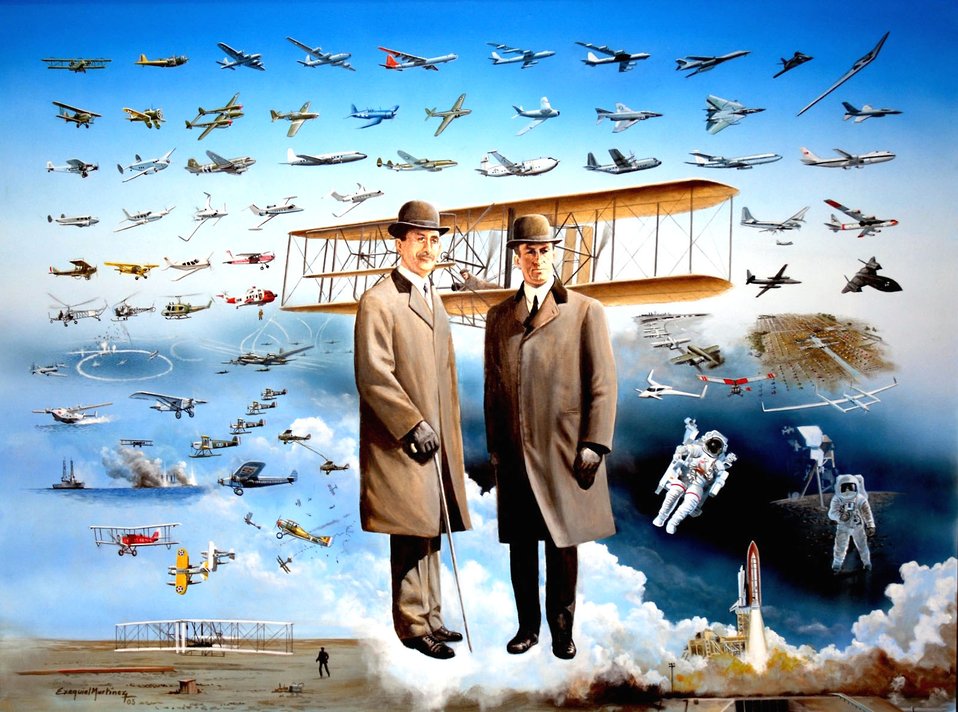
Museum commemorates 60th anniversary with art exhibit